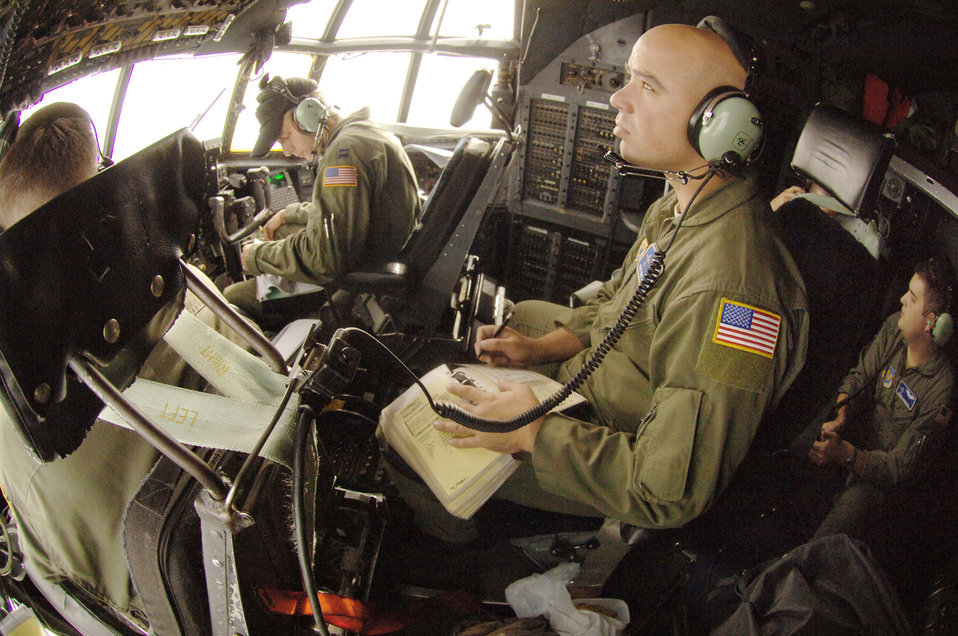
C-130 arrival in Poland marks end, new beginning

Staff Sgt. Eric Kleser (second from right) and Capt. Ryan Donohoe (far right) assist the aircrew fly the last E-model C-130 Hercules to officially depart Ramstein Air Base, Germany, Nov. 2, 2009, to Powidz Air Base, Poland. Sergeant Kleser is a C-130 flight engineer, and Captain Donohoe is an instructor navigator.